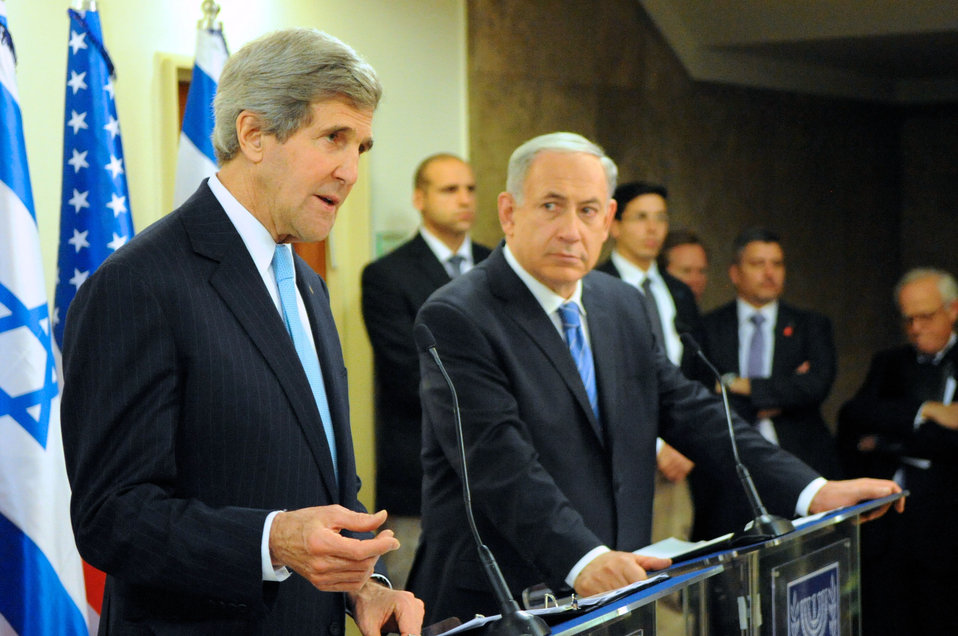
Secretary Kerry and Israeli Prime Minister Netanyahu Address Reporters

Israeli Prime Minister Benjamin Netanyahu looks on as U.S. Secretary of State John Kerry addresses reporters before a series of meetings at the Prime Minister's office in Jerusalem on January 2, 2014.